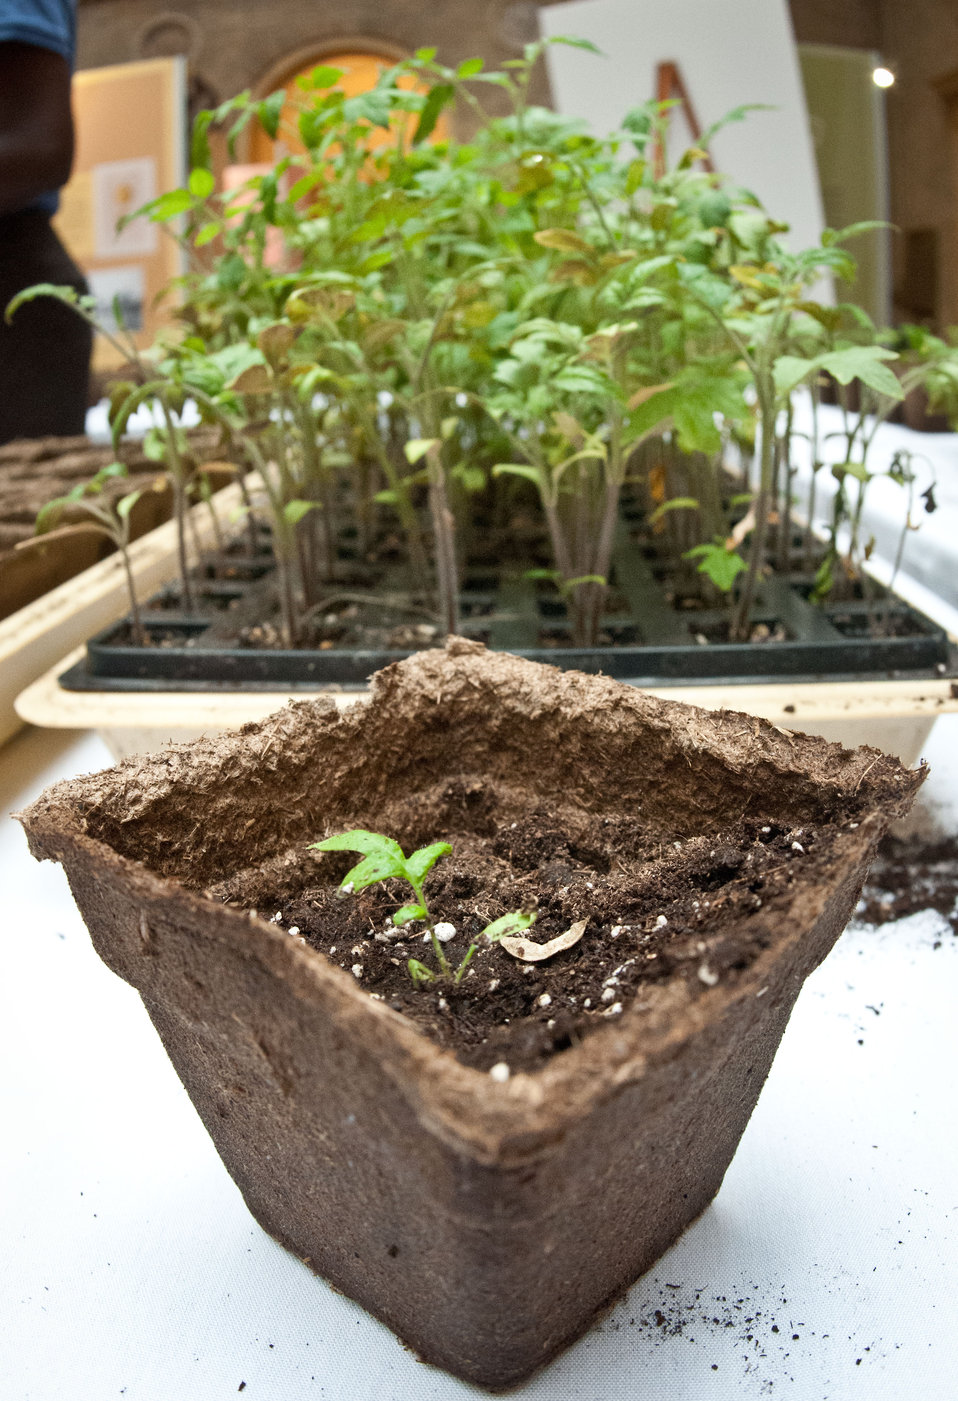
The People’s Garden Initiative and volunteer Executive Master Gardeners distributed ‘Abraham Lincoln” Tomato seedlings that the People’s Garden Initiative is distributing to USDA employees in celebration of the 150th Anniversary of the U.S. Department of Agriculture, on Tuesday, May 15, 2012 in Washington, D.C., on this day, 150 years ago, President Abraham signed the Department into existence during the Civil War. Cow manure-fiber based seed starter pots are safe to touch and have had all weeds, pathogens and odor removed, and will be planted with the seedling. The roots will grow through the sides as it degrades and releases nitrogen into the soil, helping the plant. When this seedling grows to more than a foot tall, it is important to bury the entire pot so that the edges do not wick moisture away from the roots and into the air. In 1923 the H.W. Buckbee seed company of Rockford, Illinois introduced an heirloom variety named in honor of Illinois’ Greatest Son – Abraham Lincoln. The plant produces large beefsteak tomatoes in about 90 days. Volunteer Executive Master Gardeners planted and cultivated more that 3,000 seedlings ranging in size from one inch to more than a foot tall, so people could choose the best ones to transport home and to stagger the harvest by selecting a small and large seedling. One of the hopes of this event is to share the joys of gardening and harvesting, as well as the opportunity to share your harvest in your community. Seed packets are being distributed to People’s Gardens worldwide.